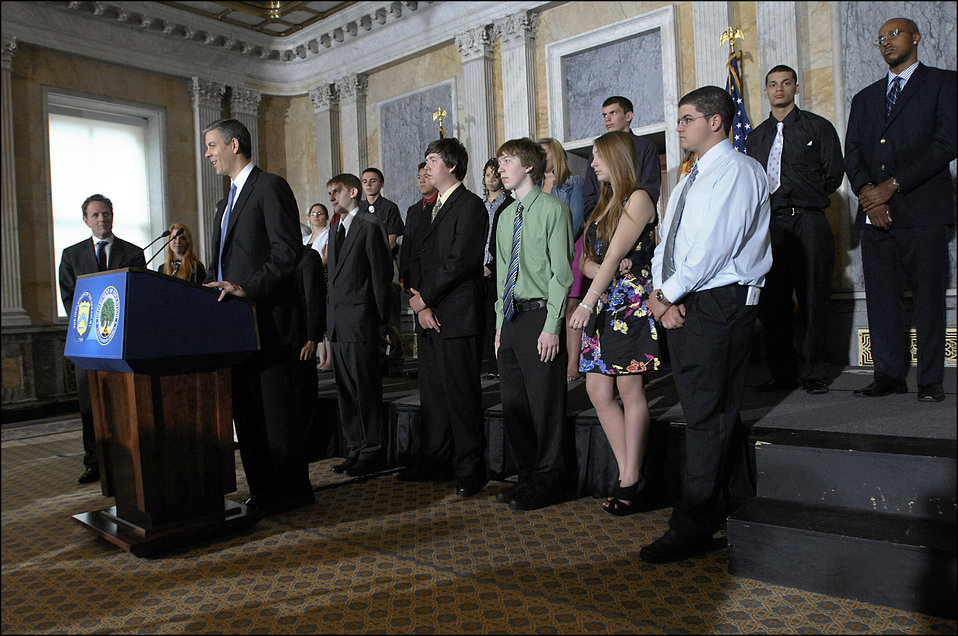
National Financial Capability Challenge, 4/28/10

Education Secretary Arne Duncan recognizing high-scoring students in the National Financial Capability Challenge on April 28, 2010.